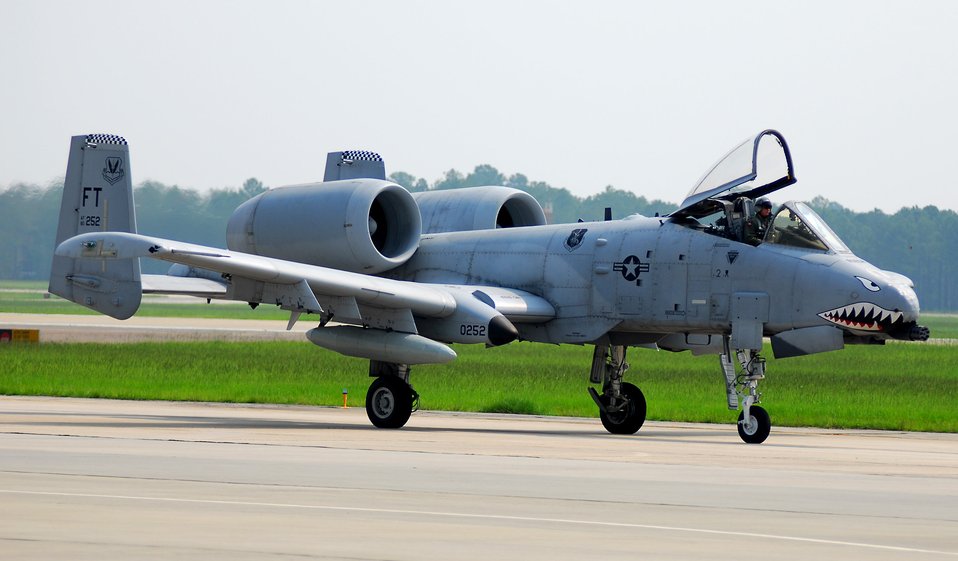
New and improved Thunderbolt IIs arrive at Moody

Lt. Col. Sam Milam taxies an A-10C Thunderbolt II to its new home Aug. 7 at Moody Air Force Base, Ga. This aircraft is the first of approximately 50 upgraded A-10Cs moving to Moody AFB as a part of a base realignment. The move is expected to be complete in early spring 2008 as aircraft are converted from A-10A to A-10C models. Colonel Milam is the 75th Fighter Squadron commander.